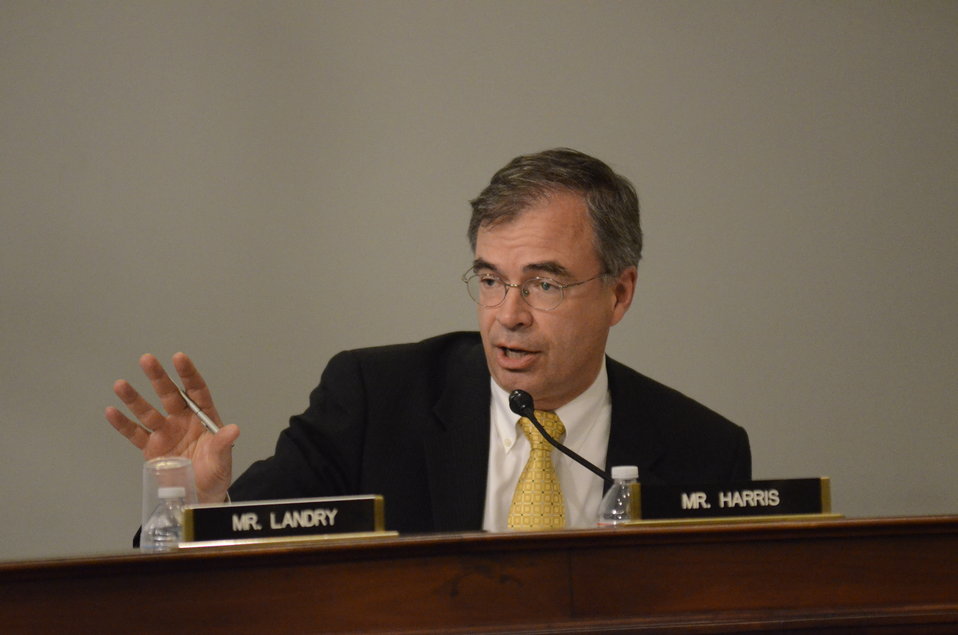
Natural Resources Committee member Congressman Andy Harris (MD) makes remarks at the hearing on Retailers & Entertainers Lacey Implementation & Enforcement Fairness Act & Freedom from Over-Criminalization & Unjust Seizures Act at the Longworth House Office Building in Washington, D.C. on Tuesday, May 8, 2012.